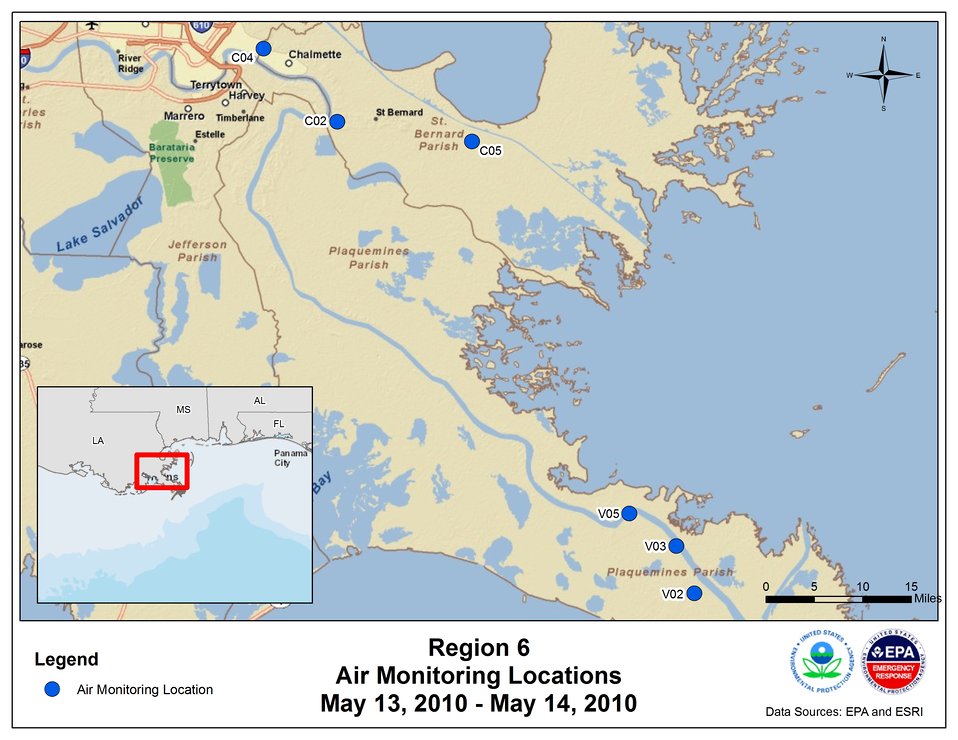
EPA Air Monitoring Locations May 13-14, 2010